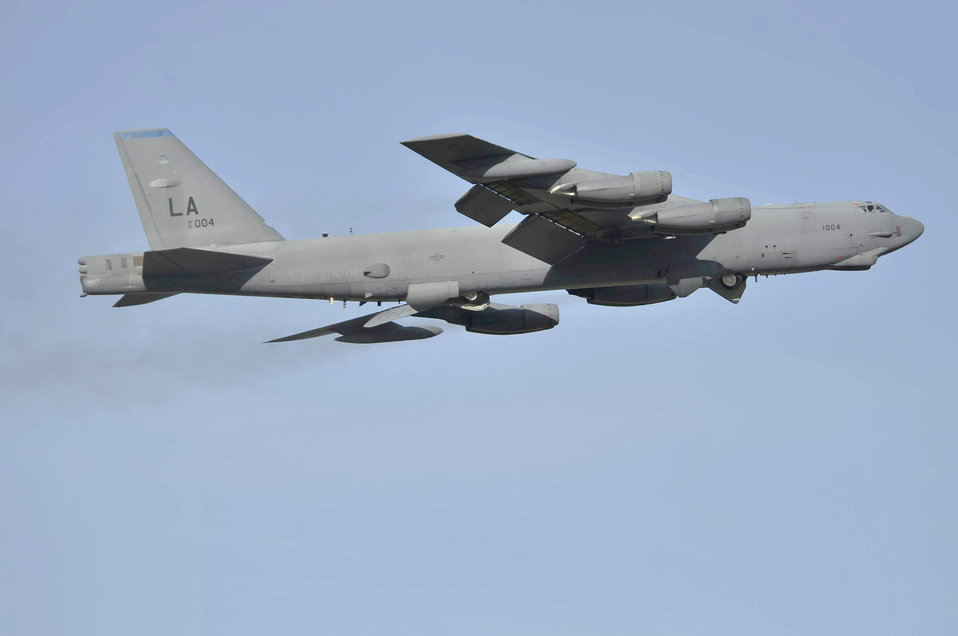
Bomber crews improve mission skills at Northern Edge 2009

A B-52H Stratofortress takes off from Eielson Air Force Base, Alaska, June 23 during Northern Edge 2009. The B-52 is a long-range bomber assigned to Barksdale AFB, La.